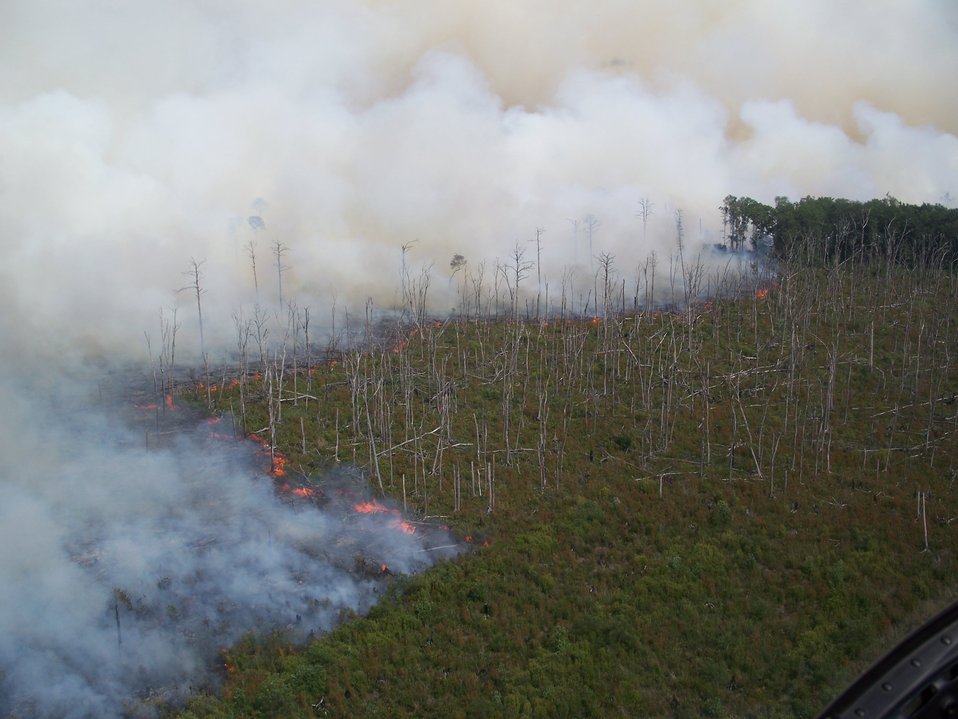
Burn over burn

Suffolk, VA, August 2011: The Lateral West Fire at Great Dismal Swamp National Wildlife Refuge burns over the footprint of the 2008 South One Fire. Dead trees and grass and brush growth after the South One Fire created flammable material to fuel a lightning strike.